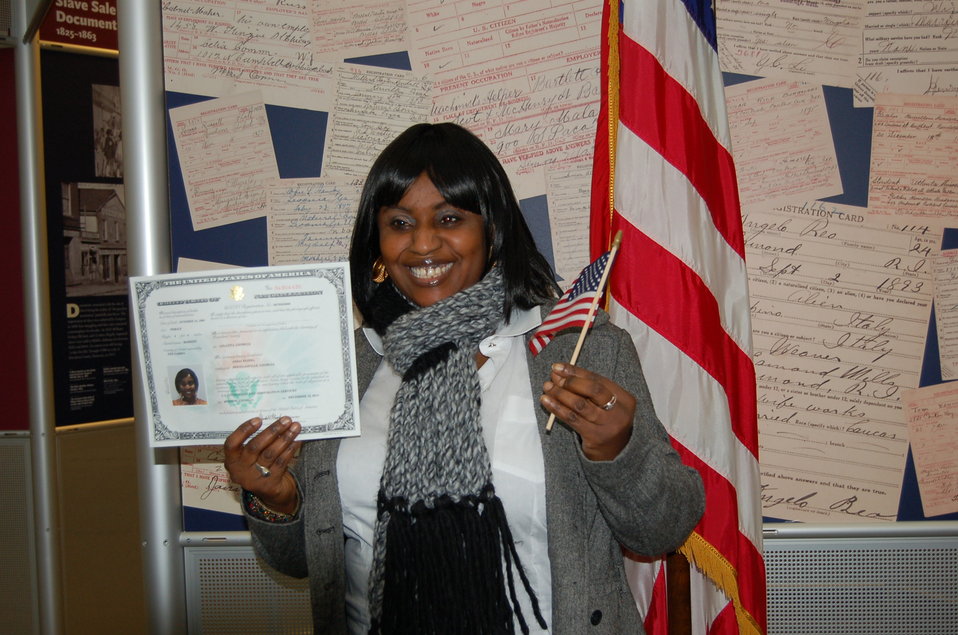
New Citizens